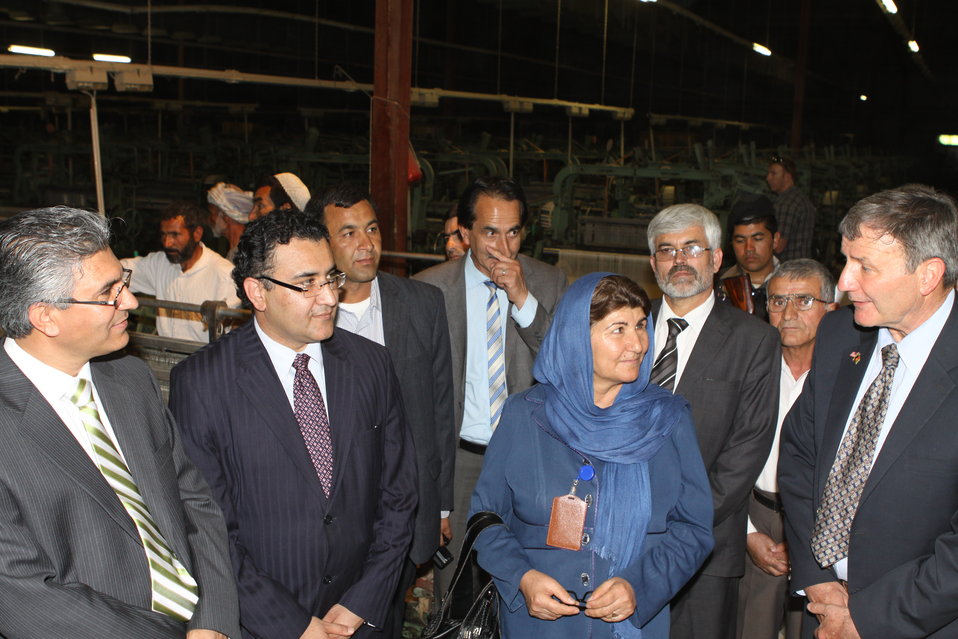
100525 Hirat Textile Company 775